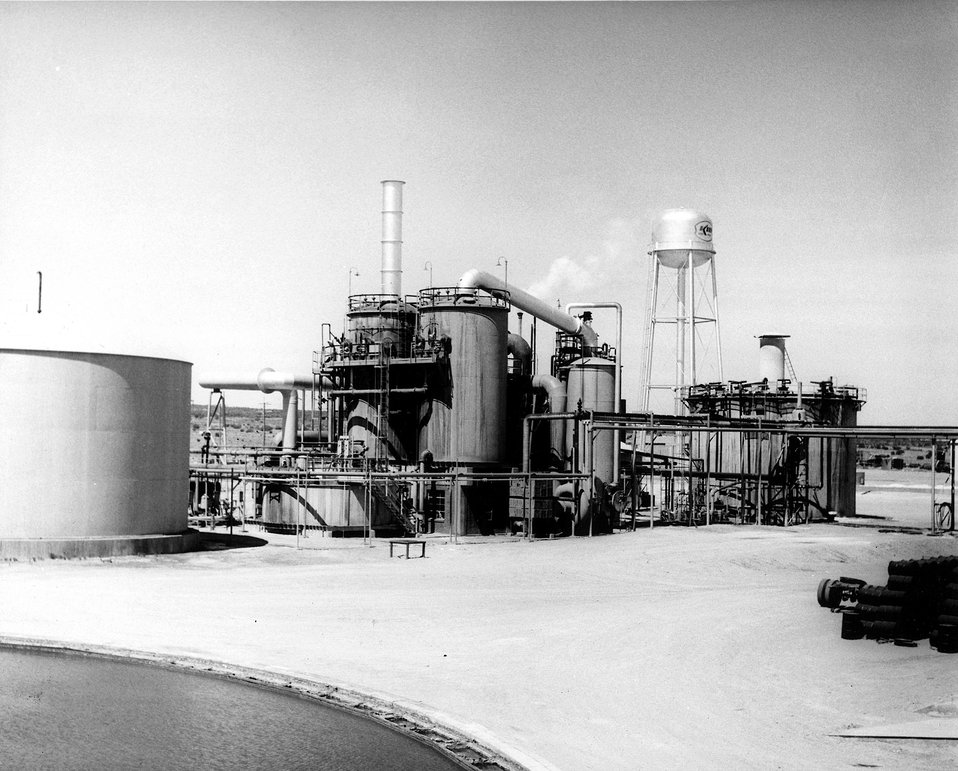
Sulfuric acid plant at the Kerr McGee mill, Grants, New Mexico. c. 1968